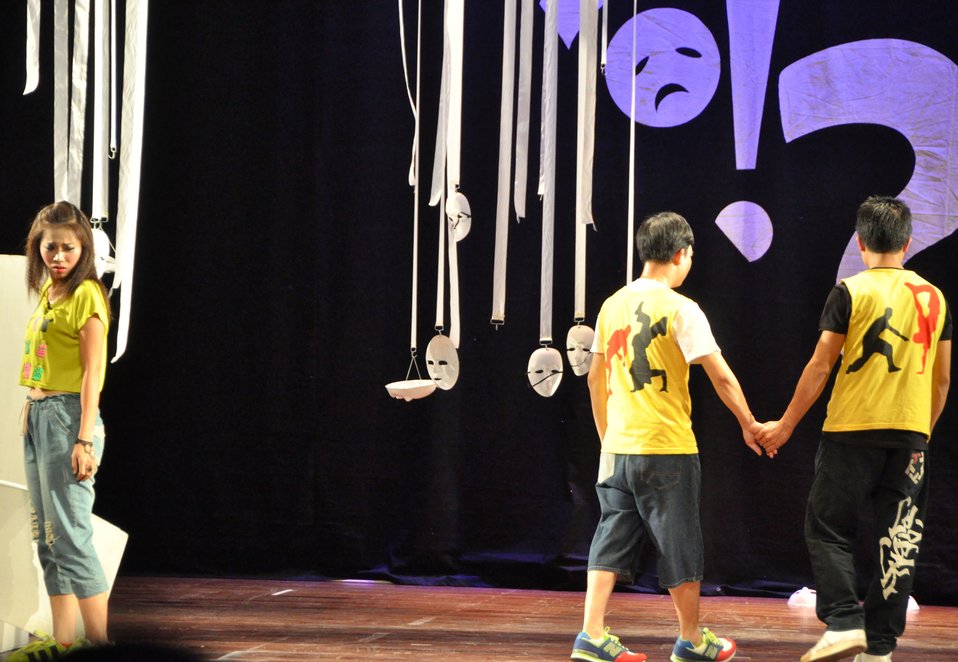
PEPFAR Musical Questions and Exclamations

Hanoi, May 17, 2013